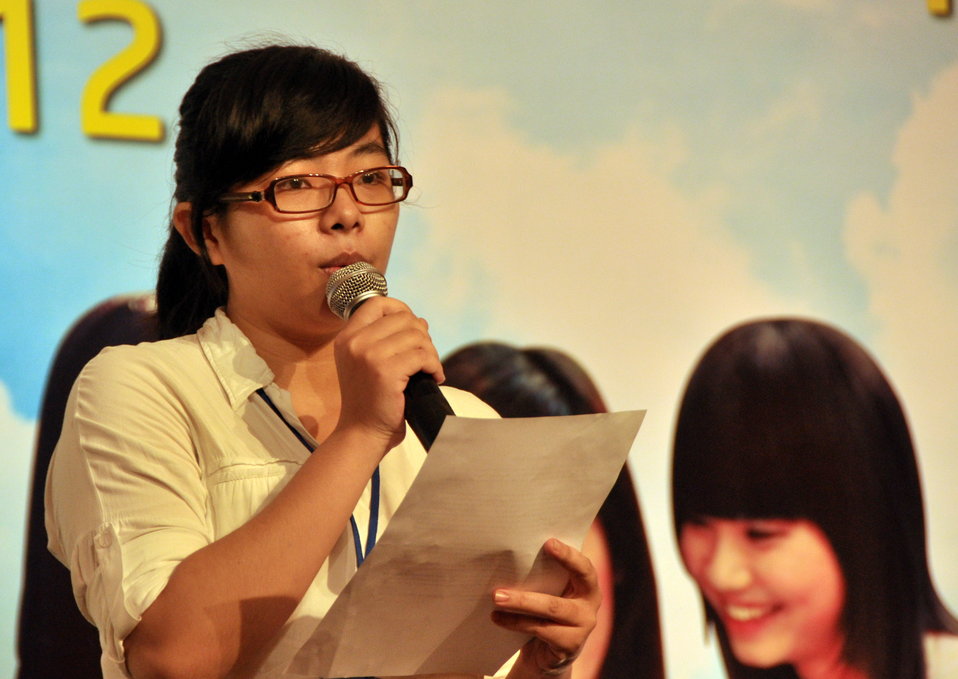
Female Vocational Student Scholarship Ceremony

Ho Chi Minh City, January 11, 2013